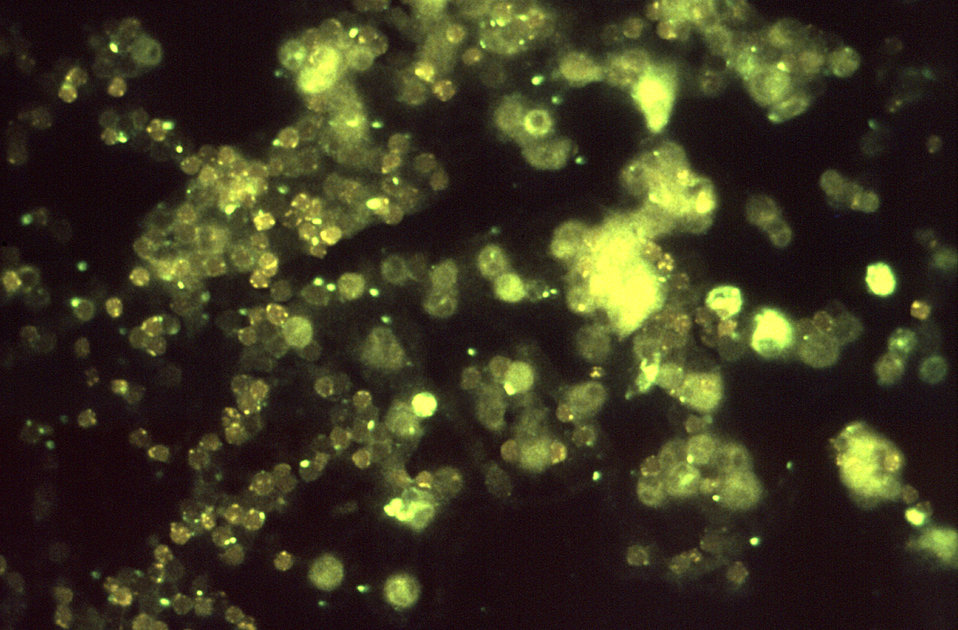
This micrograph depicts the results of using the fluorescent antibody technique to confirm the presence of Legionella pneumophila bacteria in this tissue sample from a victim of the 1976 Legionnaires' disease outbreak in Philadelphia.